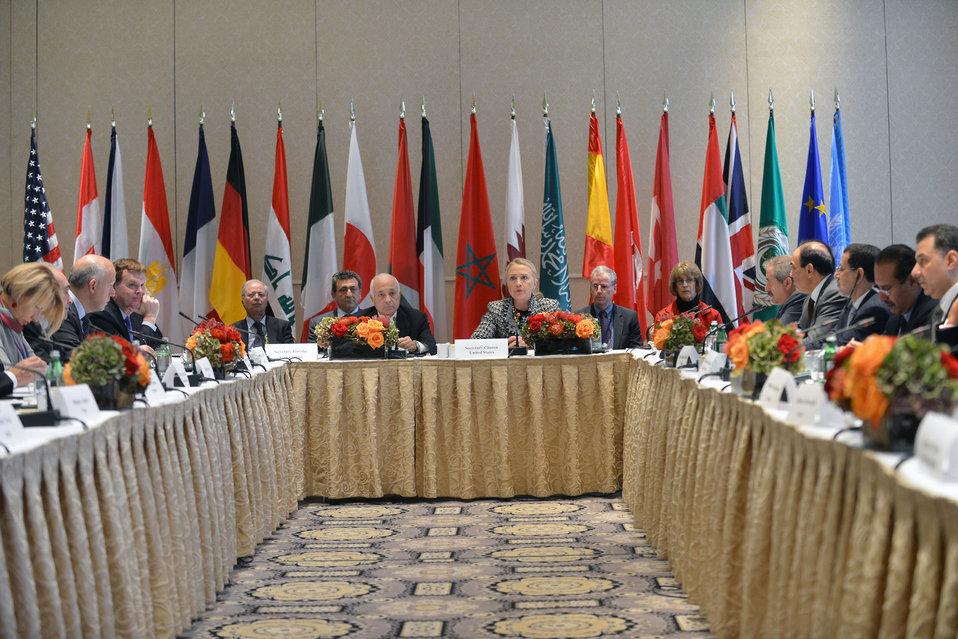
Secretary Clinton Hosts Ad Hoc Friends of the Syrian People Ministerial

U.S. Secretary Clinton hosts the Ad Hoc Friends of the Syrian People Ministerial, at the Waldorf Astoria in New York City, September 28, 2012.